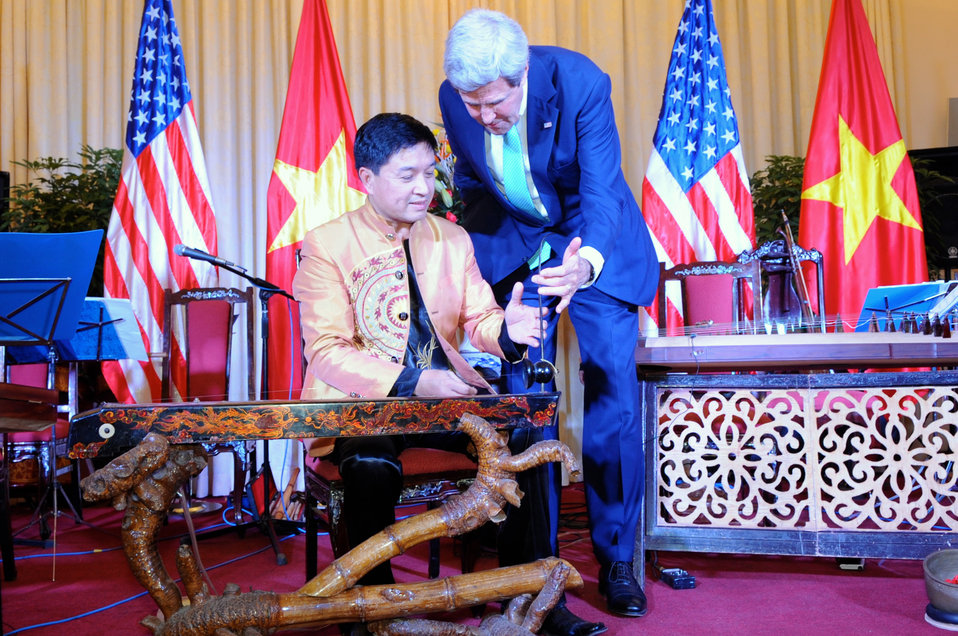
Secretary Kerry Receives Instruction on Playing a Vietnamese Monochord

A musician explains to U.S. Secretary of State John Kerry how to play a dan bau, or one-string guitar, after a performance at a dinner in the Secretary's honor in Hanoi, Vietnam, on December 16, 2013.